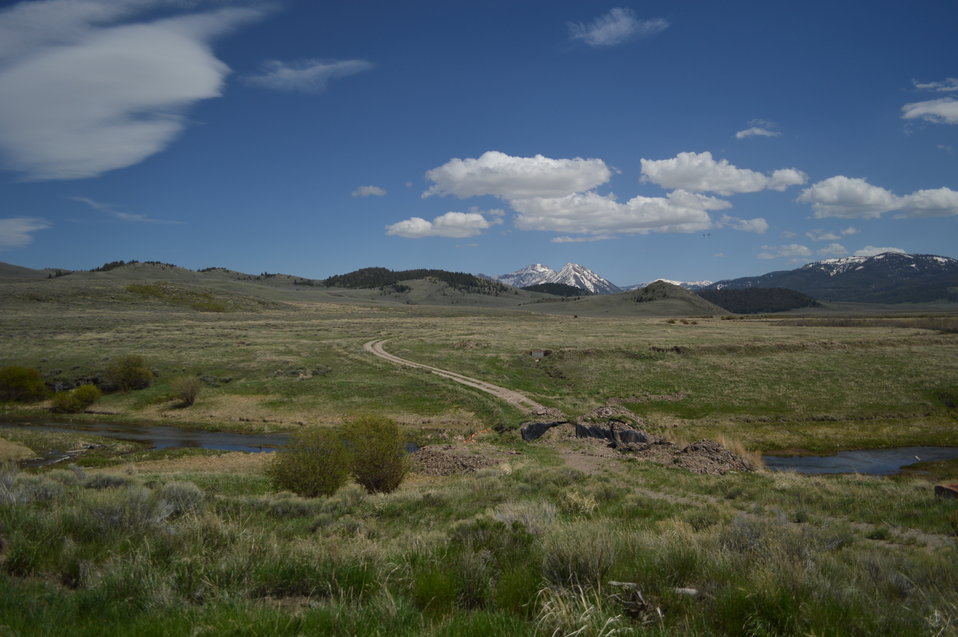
Regional Leadership Visit to Montana 2014